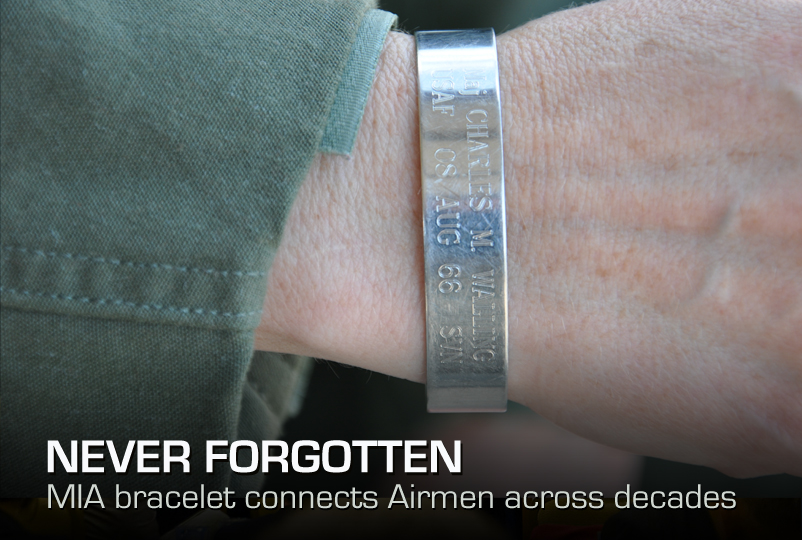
Never Forgotten